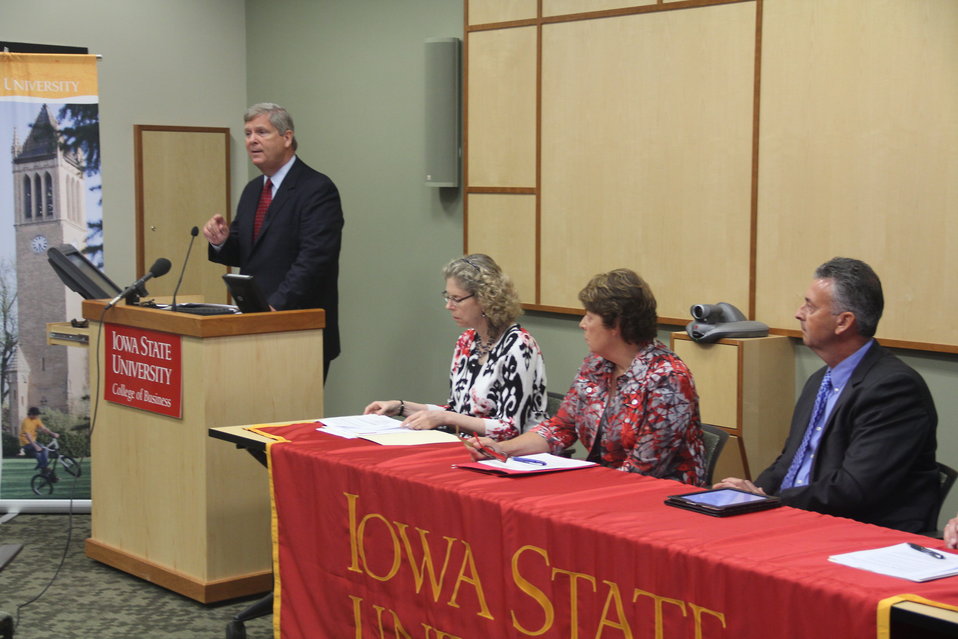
Agriculture Secretary Tom Vilsack hosts a roundtable discussion on immigration reform at Iowa State University in Des Moines, IA on Friday, Aug. 30, 2013. (L to R Agriculture Secretary Tom Vilsack, Iowa State University College of Agriculture and Life Sciences Dean Dr. Wendy Wintersteen, DuPont Pioneer corporate counsel Helen Adams, and Ollie, IA dairy farmer Rob Wonderlich )